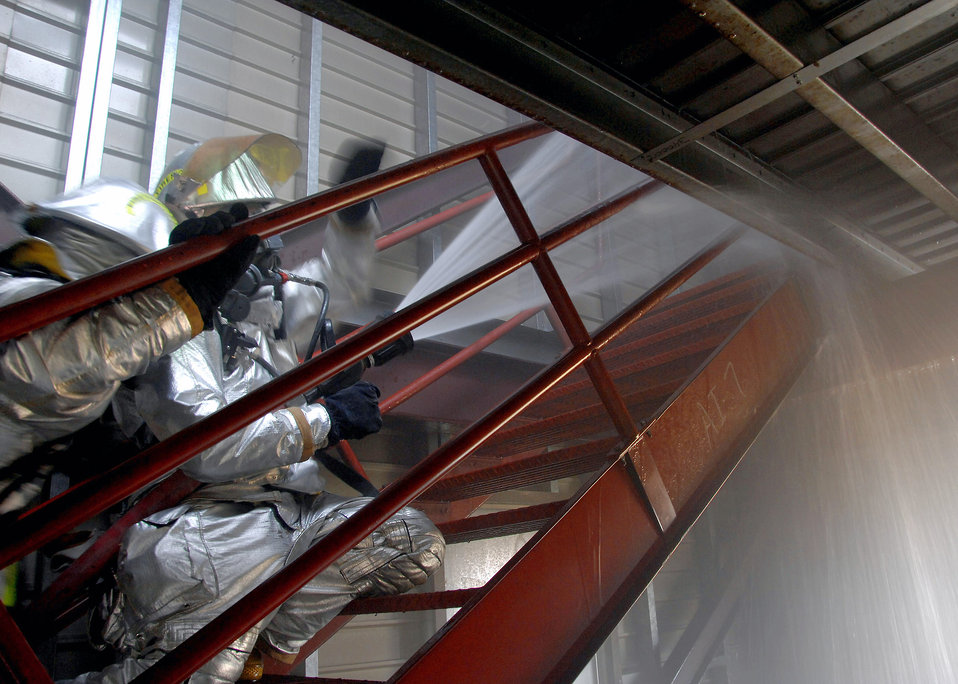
We didn't start the fire...

Two firefighters advance toward a floor